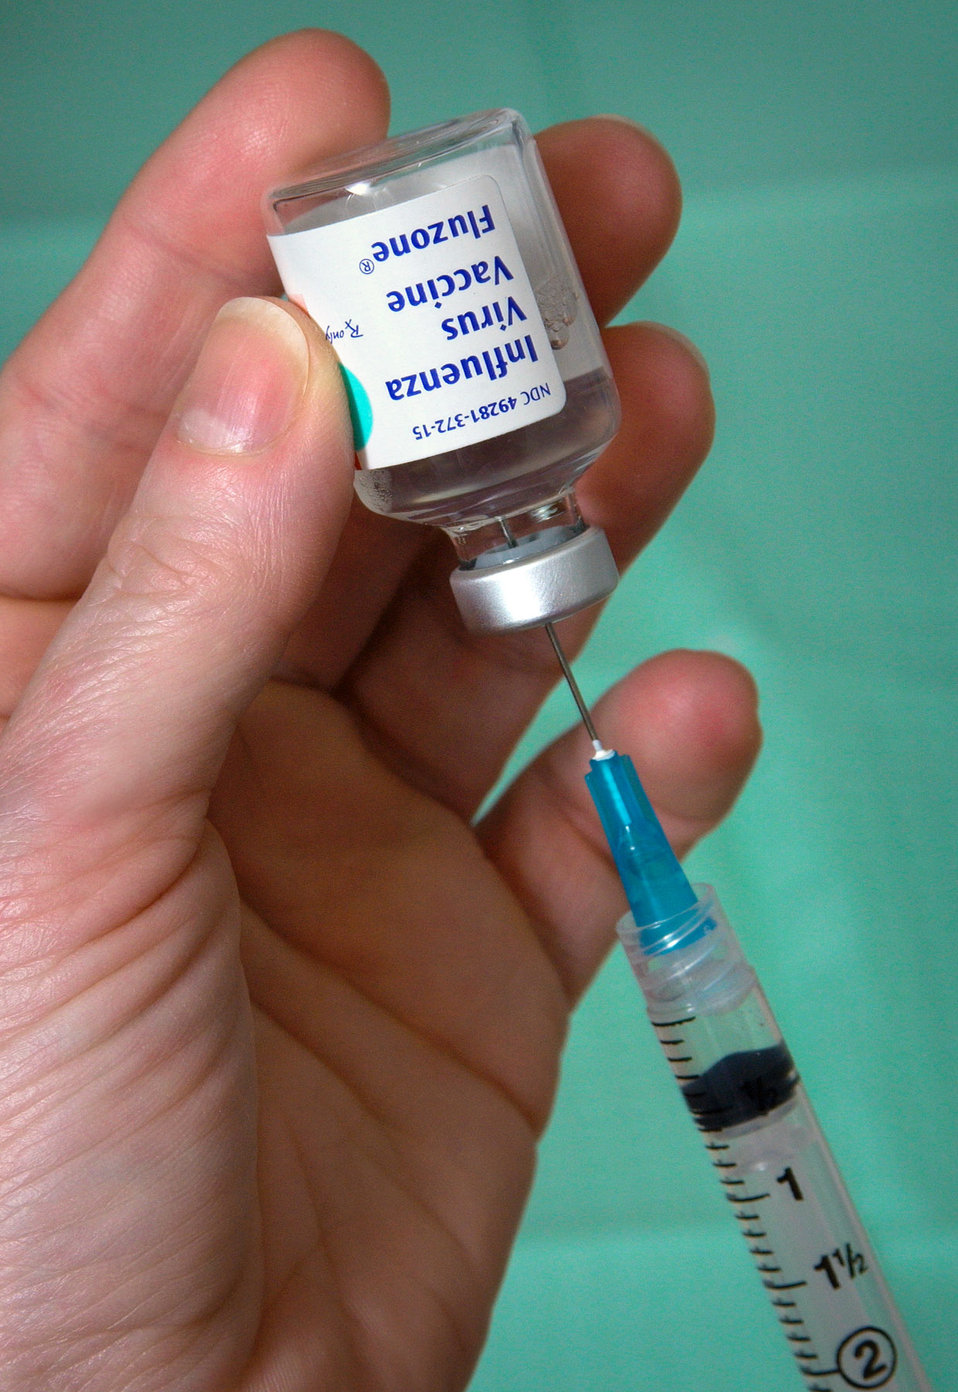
This is CDC Clinic Chief Nurse Lee Ann Jean-Louis extracting Influenza Virus Vaccine, Fluzone� from a 5 ml. vial.